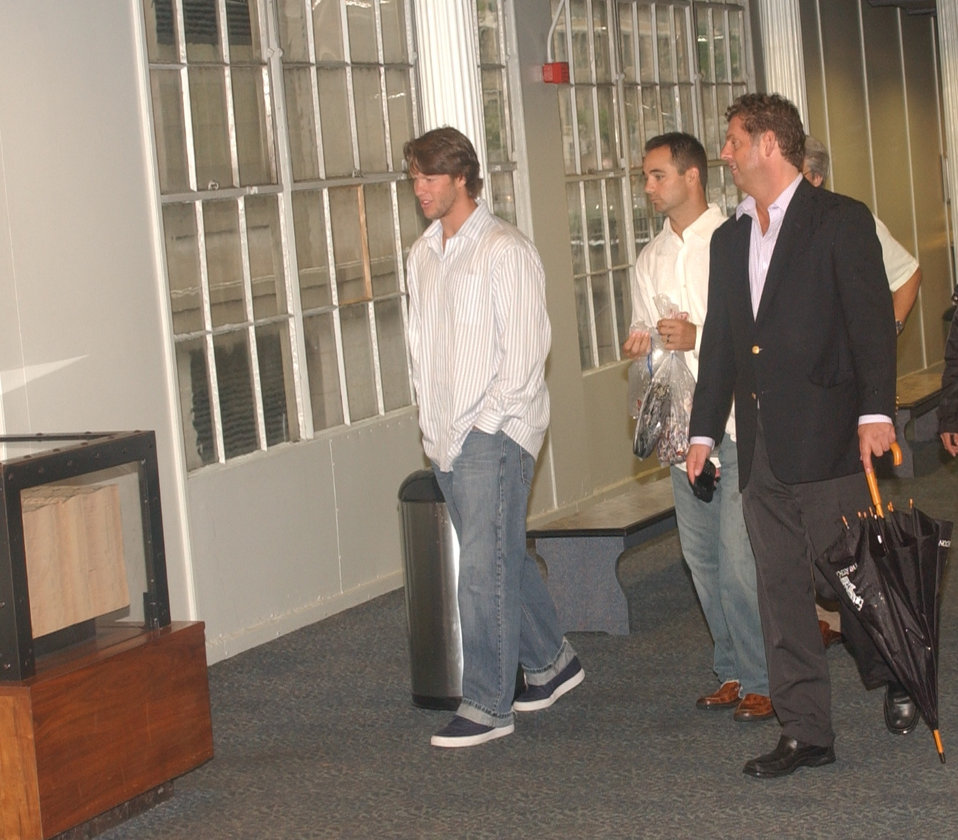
LA Dodgers Visit the Bureau of Engraving and Printing

Dodgers Pitchers Clayton Kershaw and Ted Lilly walk up to $1 million in 10 dollar bills.